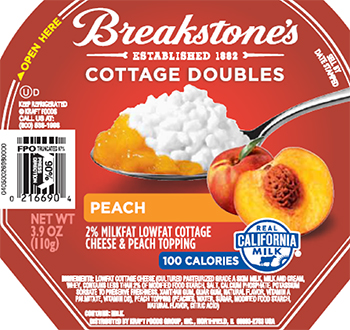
RECALLED – Cottage Cheese products

May 17, 2014 – Product Recall – Kraft Foods Group Voluntarily Recalls Select Cottage Cheese Products Due to Out-of-Standard Storage Temperatures
Certain Knudsen Cottage Cheese, Breakstone’s Cottage Cheese, Simply Kraft Cottage Cheese and Daily Chef Cottage Cheese Products Included in the Recall
.